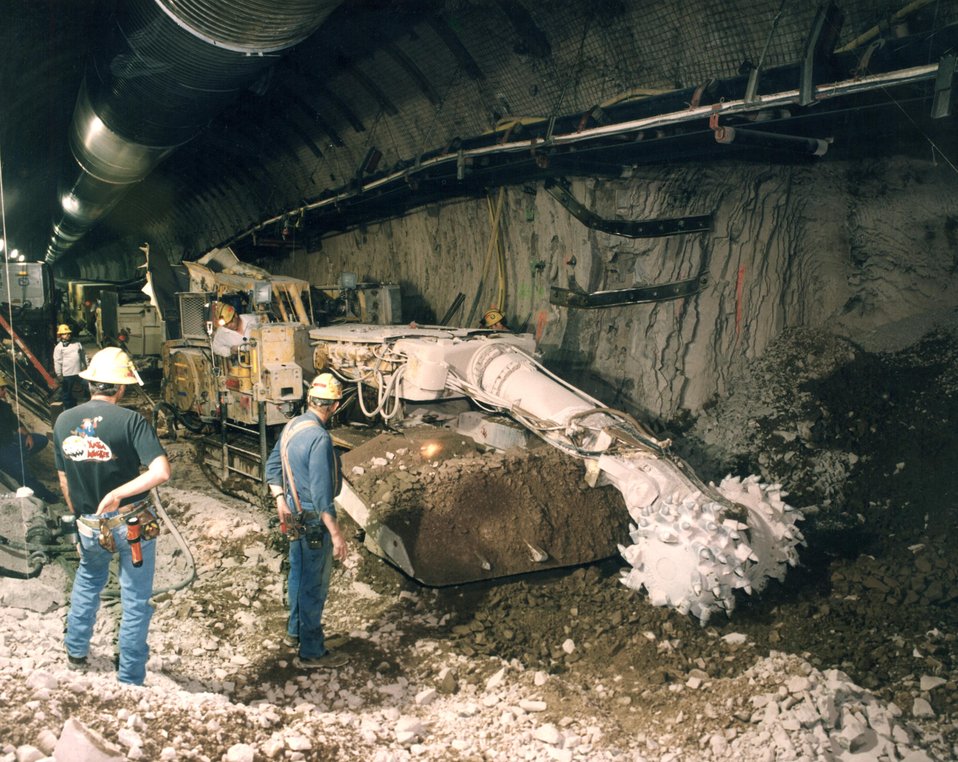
ALPINE MINER EXCAVATING ONE OF SEVEN ALCOVES IN THE MAIN TUNNEL TO TEST YUCCA MOUNTAIN'S GEOLOGIC FEATURES.

YUCCA MOUNTAIN IS THE SITE CONGRESS DESIGNATED FOR STUDY TO DETERMINE ITS SUITABILITY AS A GEOLOGIC REPOSITORY FOR THE NATION'S SPENT NUCLEAR FUEL AND HIGH LEVEL RADIOACTIVE WASTE. IT IS 100 MILES NORTHWEST OF LAS VEGAS IN AN ISOLATED PART OF NYE COUNTY. THE LONG NARROW RIDGE IS IN AN ARID TRANSITION ZONE BETWEEN THE LOWER MOJAVE DESERT AND THE RUGGED BASIN AND RANGE REGIONS.